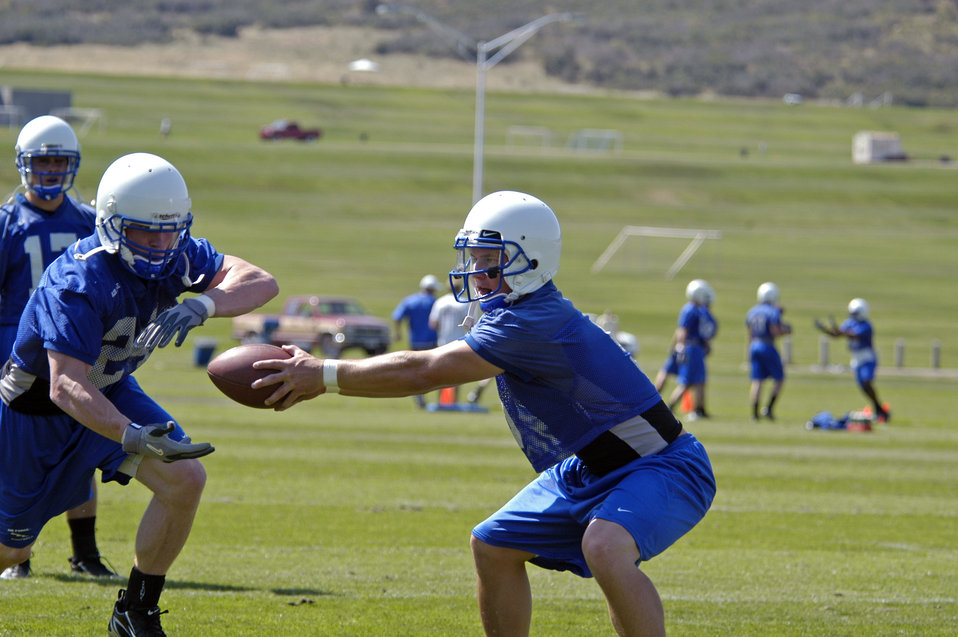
Falcons have everything to prove this football season

Falcon senior quarterback Shaun Carney hands off to senior tailback Chad Smith at the season-opening practice Aug. 1 at the Air Force Academy in Colorado Springs, Colo.